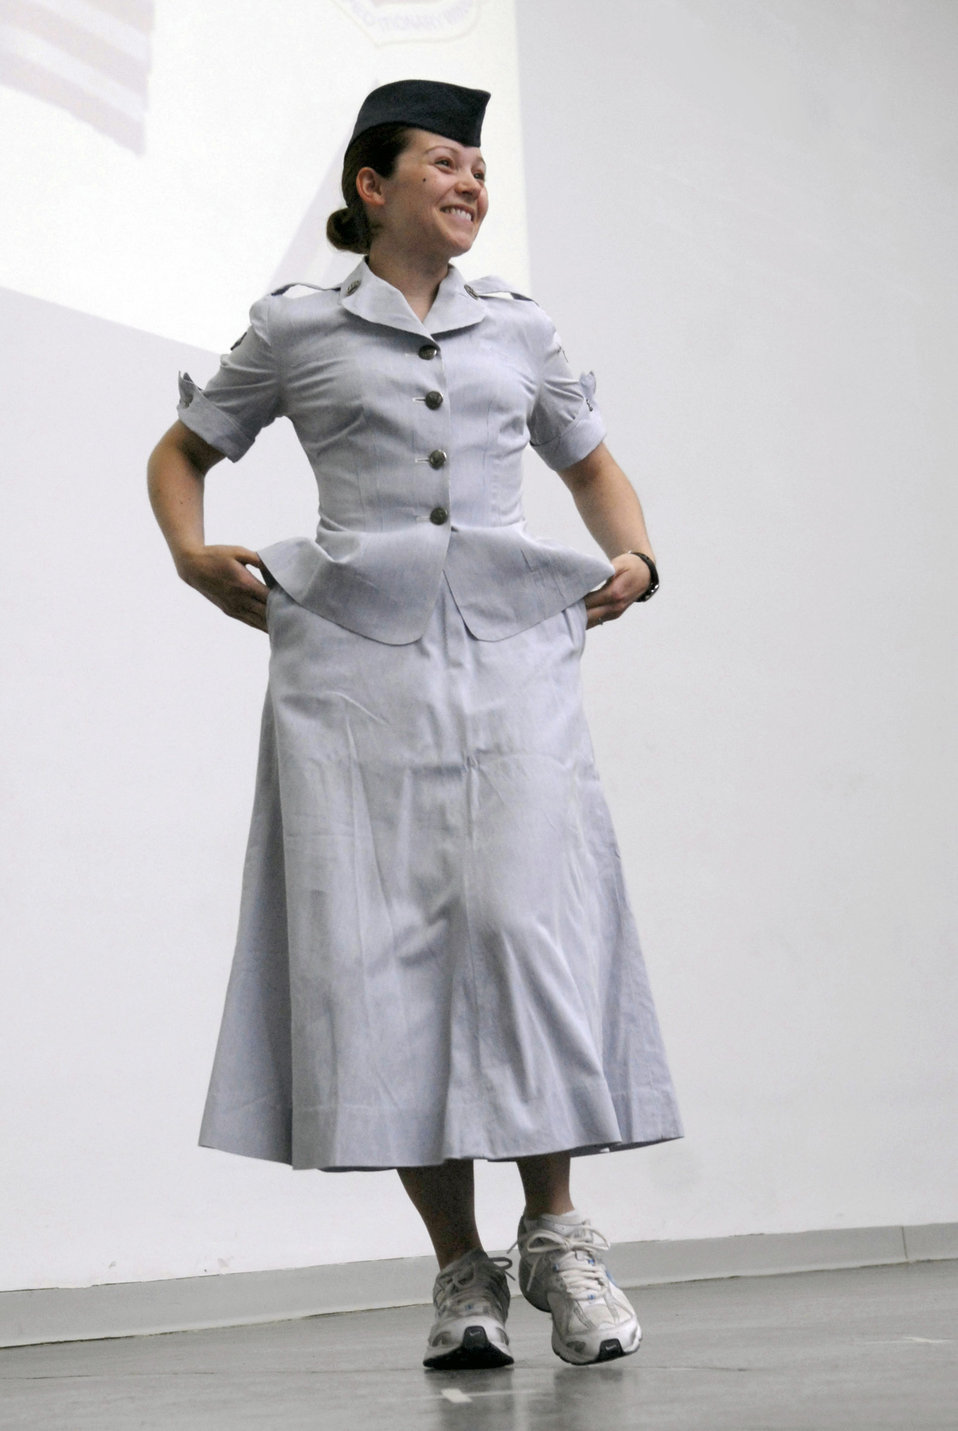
Operation Uniform Delta highlights heritage

Senior Airman Shala Santiago shows off the blue women in the Air Force (WAF) uniform from the 1950's during Operation Uniform Delta April 27 at a base in Southwest Asia. Operation Uniform Delta highlighted the Air force uniforms history and showed their transitions through the years. Airman Santiago is assigned to the 379th Expeditionary Communications Squadron.